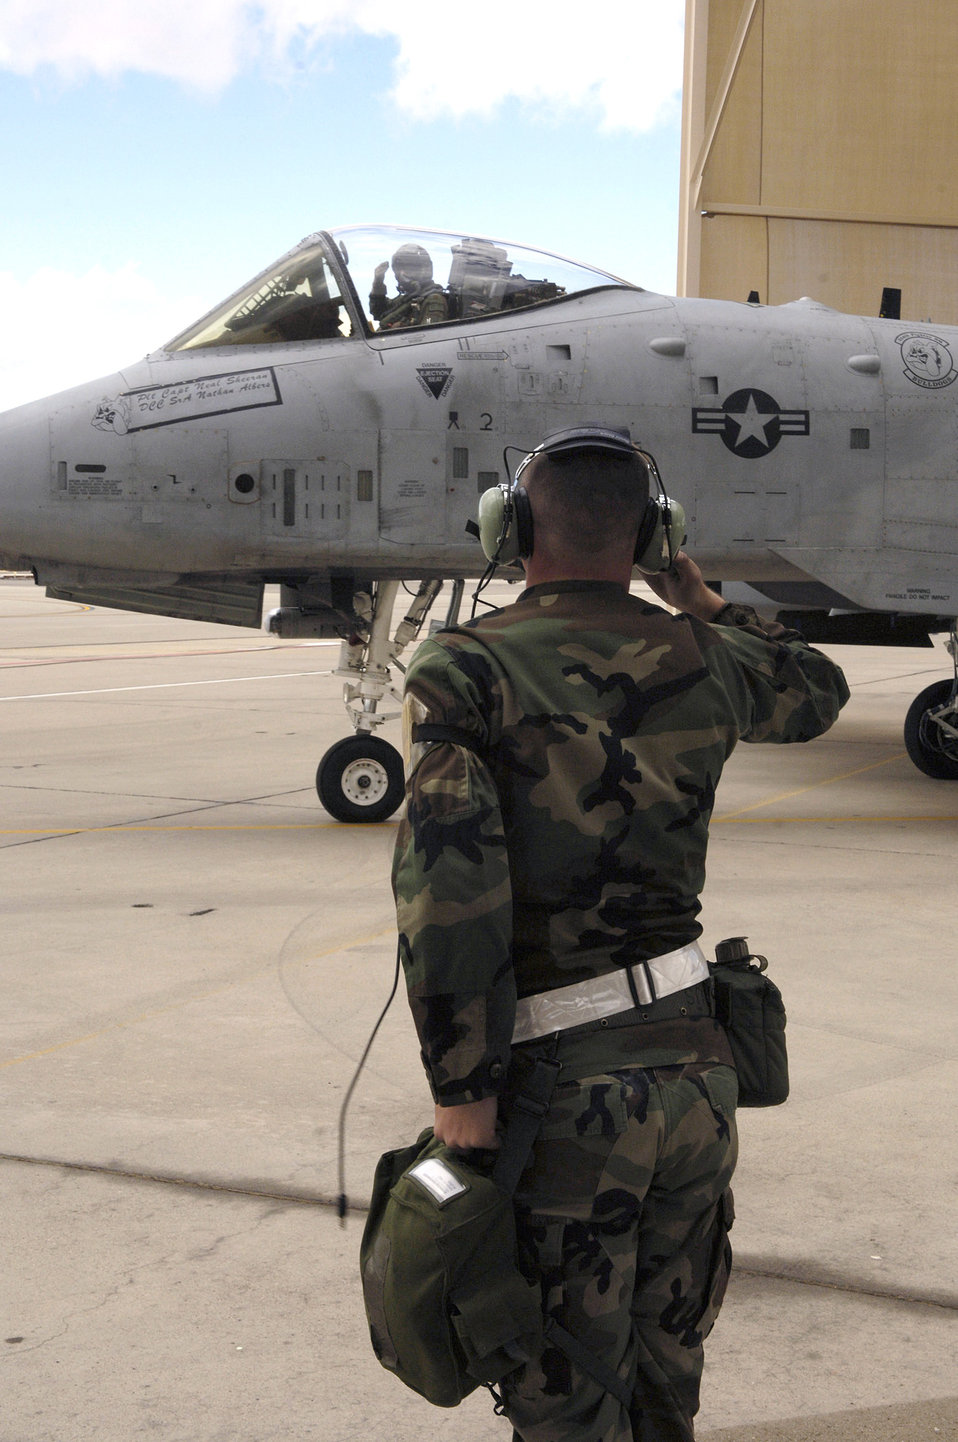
Preparing to takeoff

Airman 1st Class Chad Goucher marshals Maj. Vernie Pendley as he takes off during exercise Bushwhacker 06-02 at Davis-Monthan Air Force Base, Ariz., on Wednesday, April 05, 2006. Bushwhacker 06-02 is a Phase I and Phase II exercise demonstrating the 355th Wing's ability to prepare to deploy and fight when called. Airman Goucher is with the 355th Aircraft Maintenance Squadron, and Major Pendley is with the 354th Fighter Squadron.